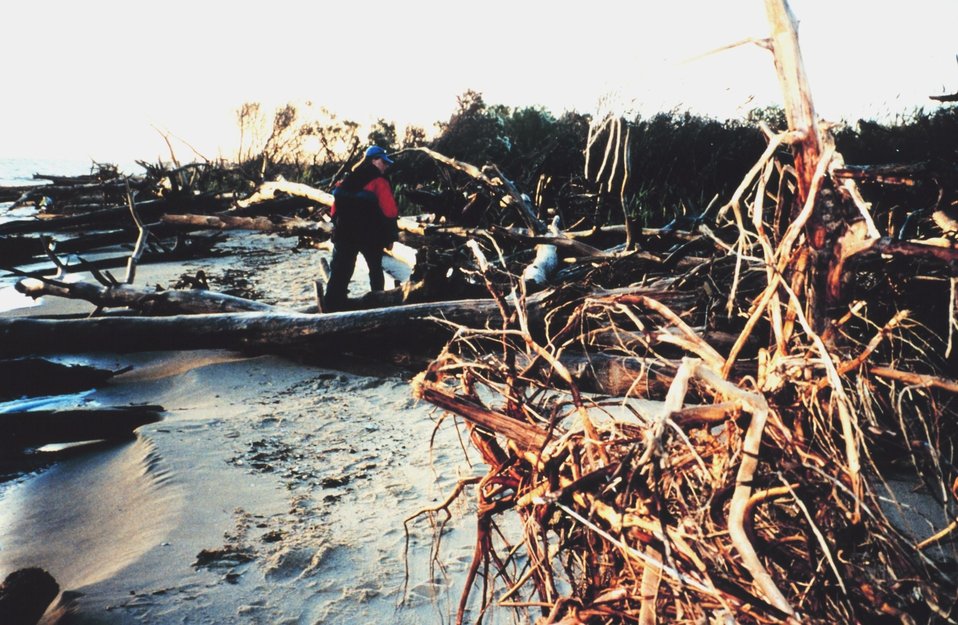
Erosion damage to Port Isobel Island as a result of Hurricane Floyd.